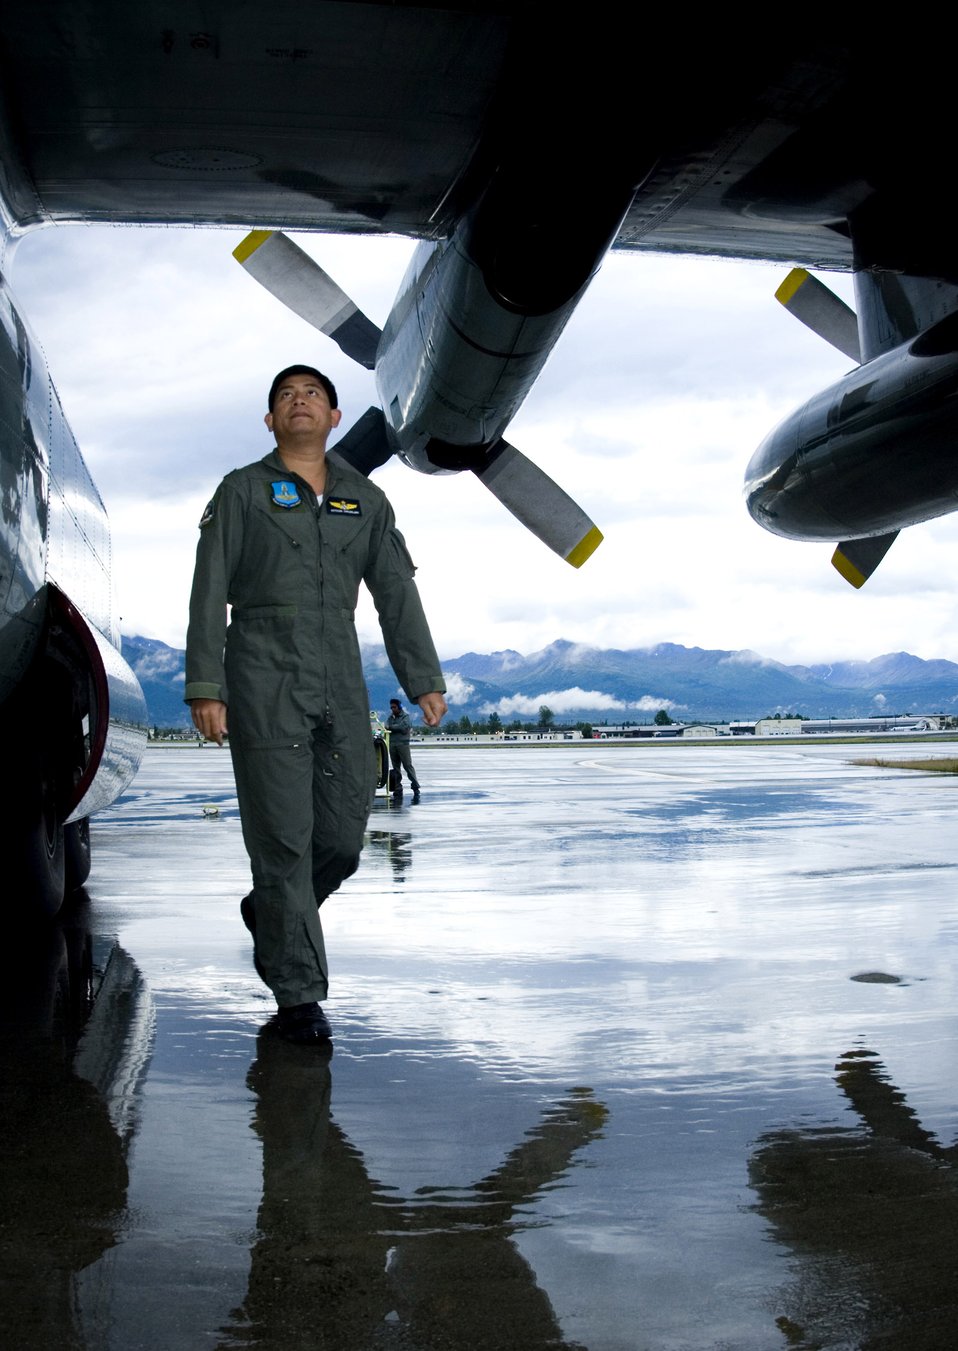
Elmendorf, coalition forces hone skills at Red Flag-Alaska

Royal Thai Air Force Captain Kittisak Chalawklang does a pre-flight check around his C-130 July 23 during Red Flag-Alaska 2007 at Elmendorf Air Force Base, Alaska. More than 80 aircraft and 1,500 servicemembers from the six countries are flying together in this multinational exercise that provides realistic combat training in a safe and controlled setting over the Pacific Alaskan Range Complex and Eielson AFB, Alaska.